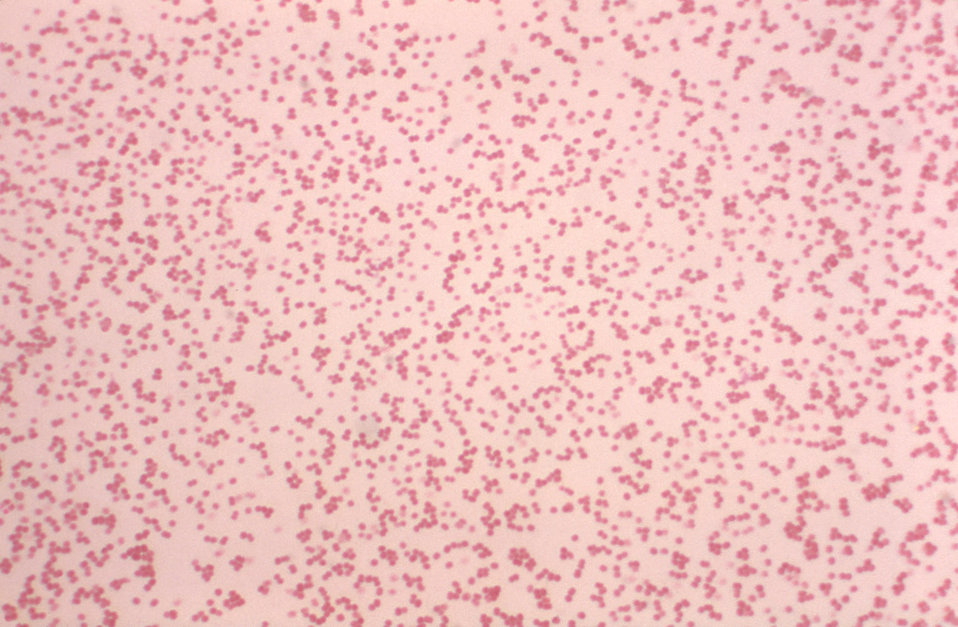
This Gram-stained photomicrograph depicts numerous gram-negative diplococci, Neisseria perflava bacteria.